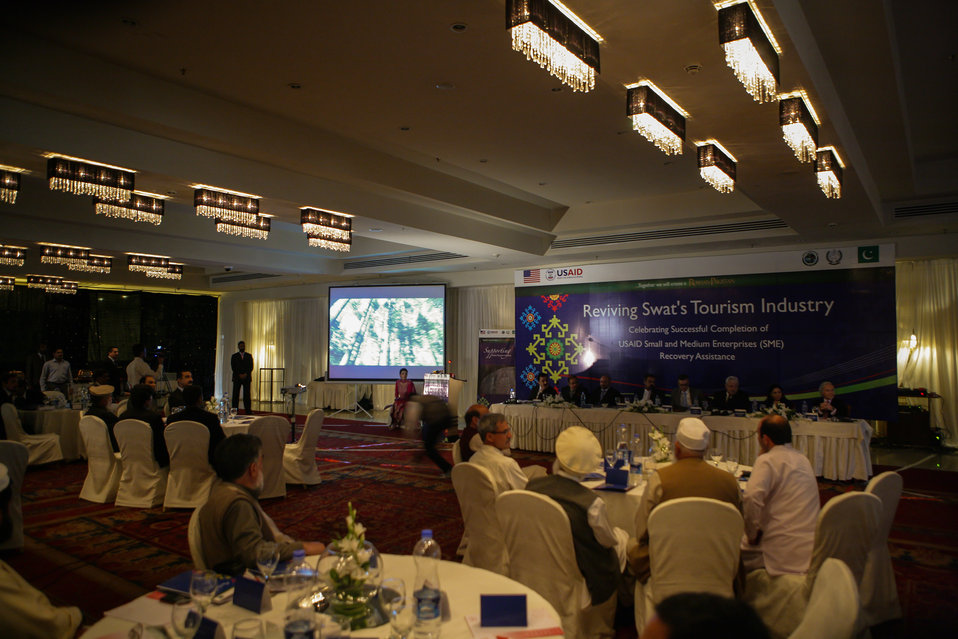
Graduation event of USAID Firms Project's Malakand Small and Medium Enterprises (SME) Recovery Assistance Program

Swat Tourism Promotion Musical Video 'Zindagi hai yahan' was played during the event. Sung by Pakistan's lead female vocalist Meesha Shafi, this music video captures the scenic beauty and traditional hospitality of Swat in its essence.